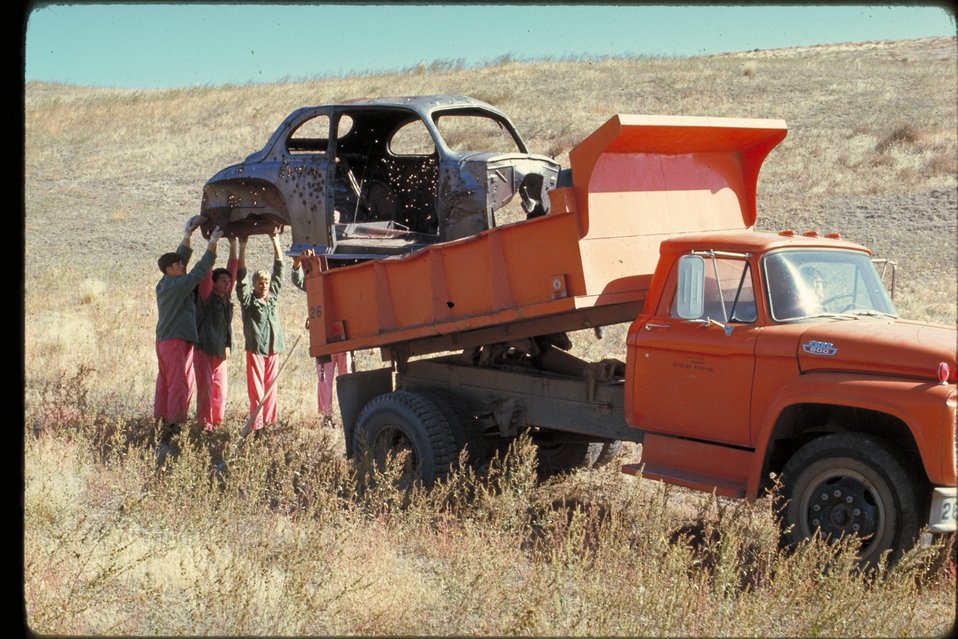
Hulls Gulch Cleanup with County Trustees Boise Front Four Rivers Field Office LSRD Lower Snake River District